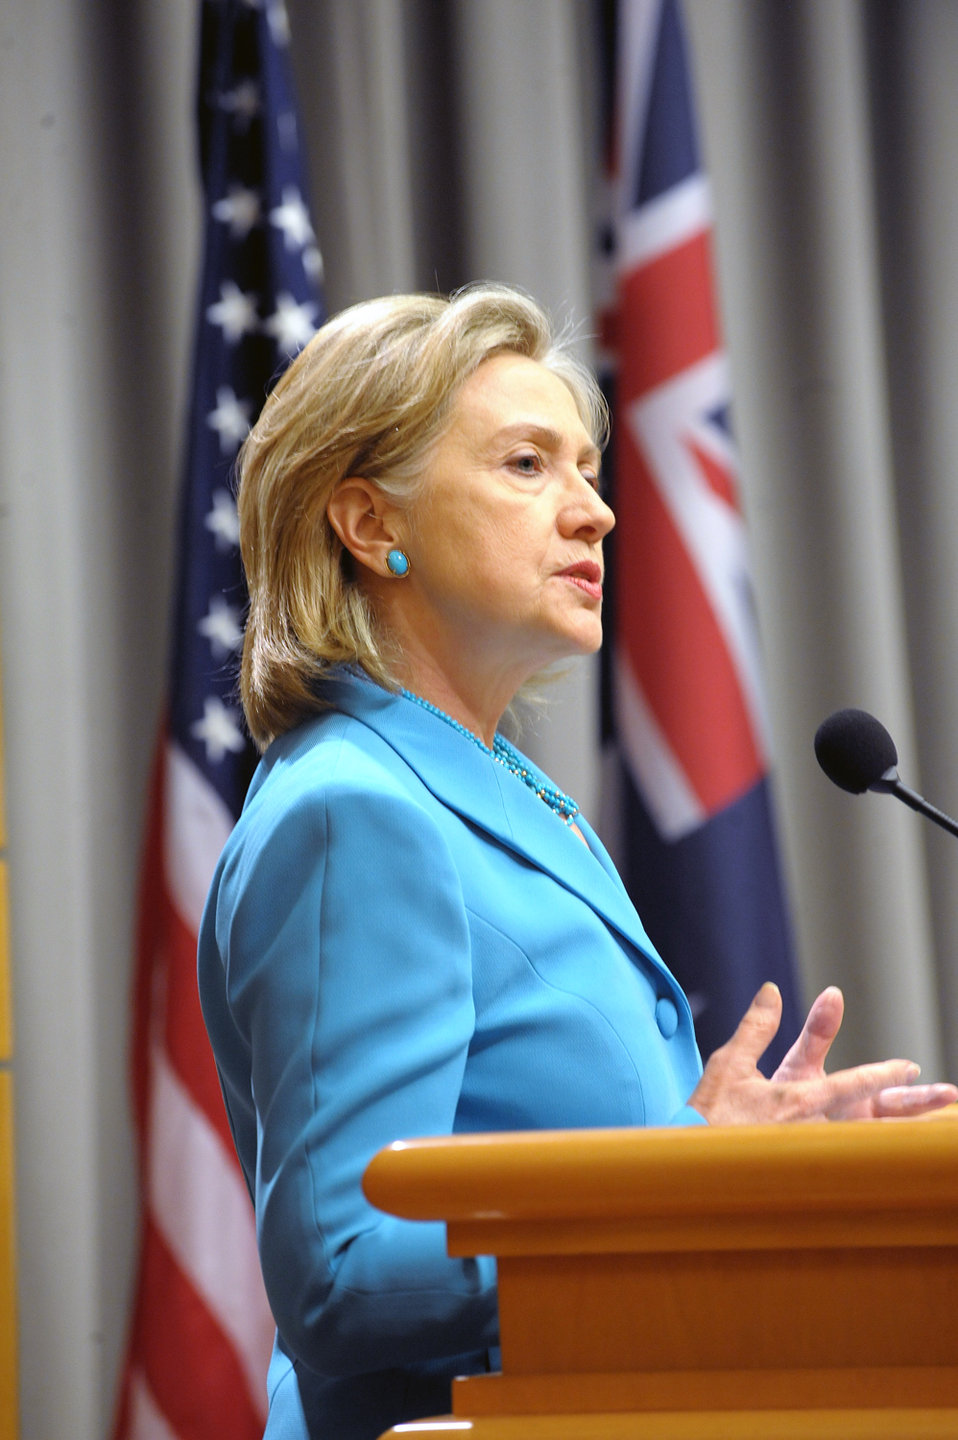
Secretary Clinton Delivers Remarks at the Australian American Leadership Dialogue (AALD)

U.S. Secretary of State Hillary Rodham Clinton delivers remarks at the opening session of the Australian American Leadership Dialogue (AALD) at the U.S. Department of State in Washington, D.C., on July 13, 2010.